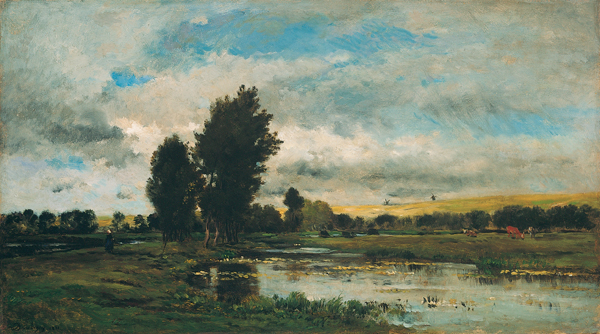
'French River Scene', oil on panel painting by Charles-François Daubigny